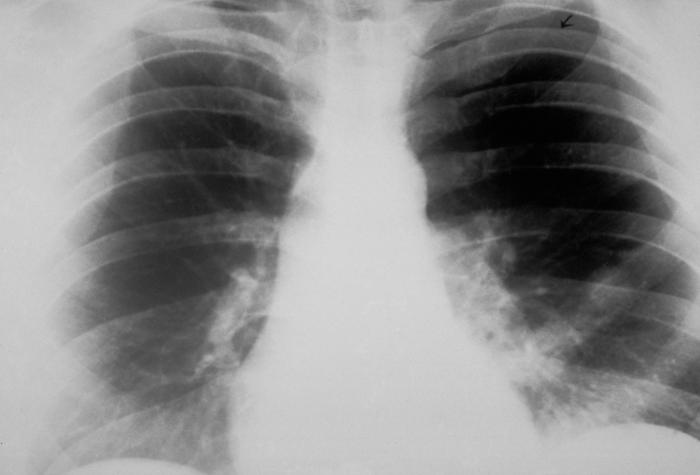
Chest radiograph showing single pulmonary nodule of histoplasmosis. Coin lesion.